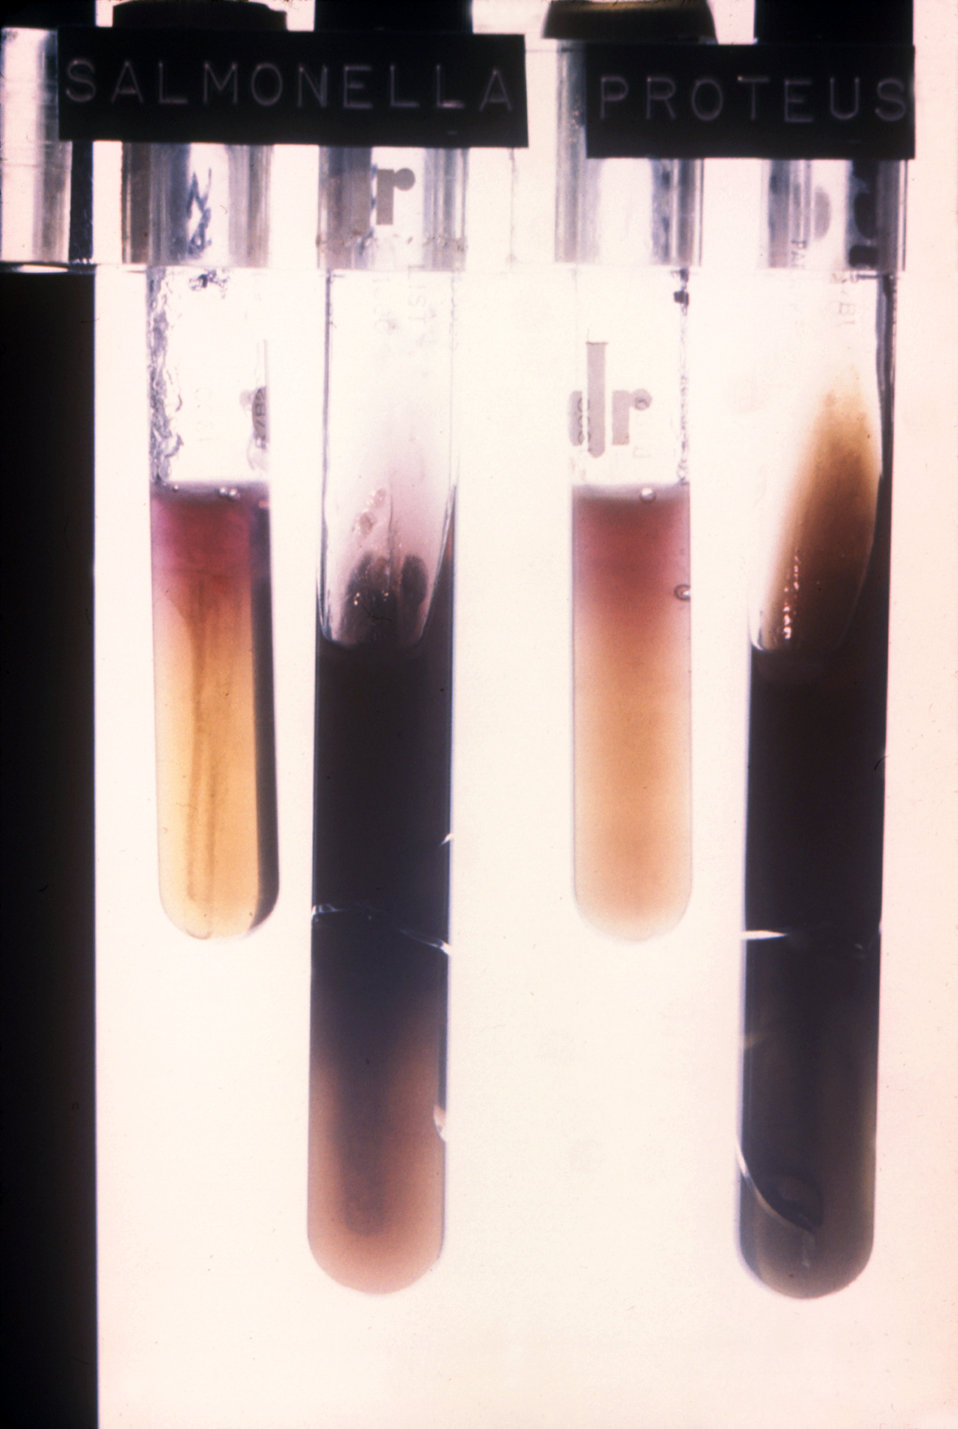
This diagnostic kit is used in clinical bacteriology to test for Salmonella spp. and Proteus spp. infections.